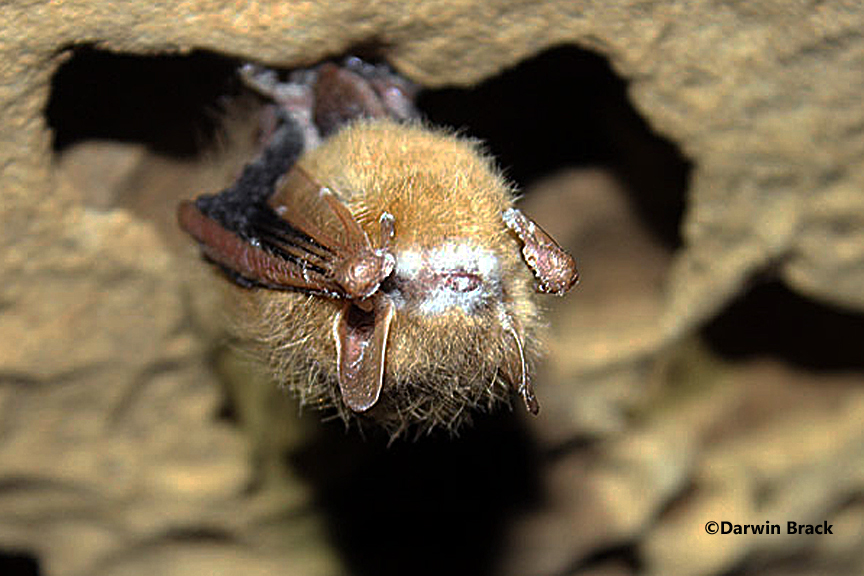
Tri-colored bat with visible WNS symptom